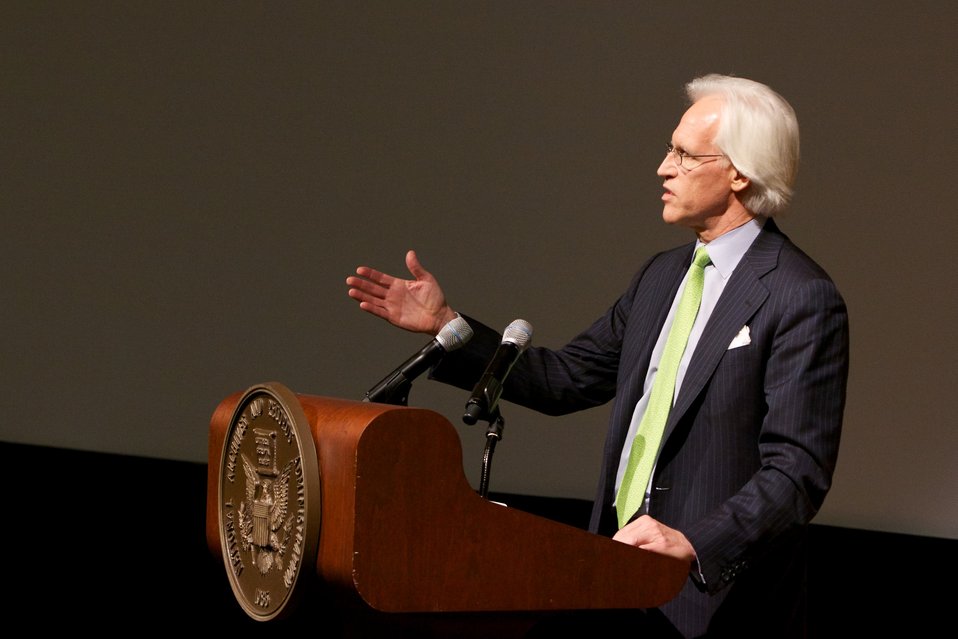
Monuments Men Public Screening; Robert M. Edsel, author, introduces The Monuments Men film based on his book of the same title